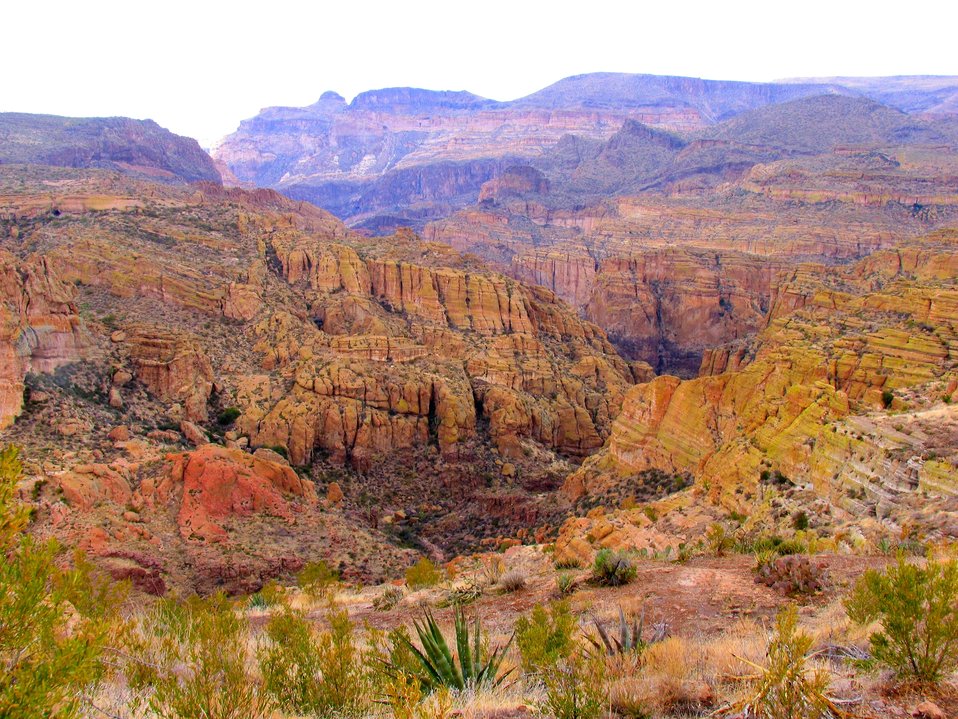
A stunning view of desert foliage in the forest with canyonlands stretching into the distance.